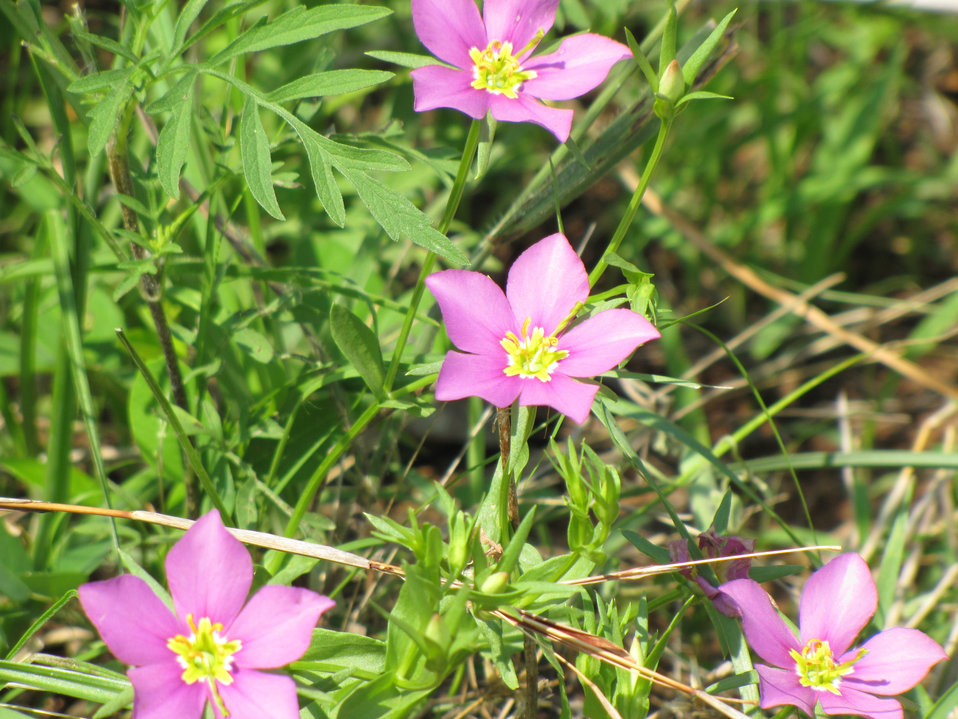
Prairie rose gentian

Sabatia campestris Nutt. at Wichita Mountains Wildlife Refuge in Oklahoma.